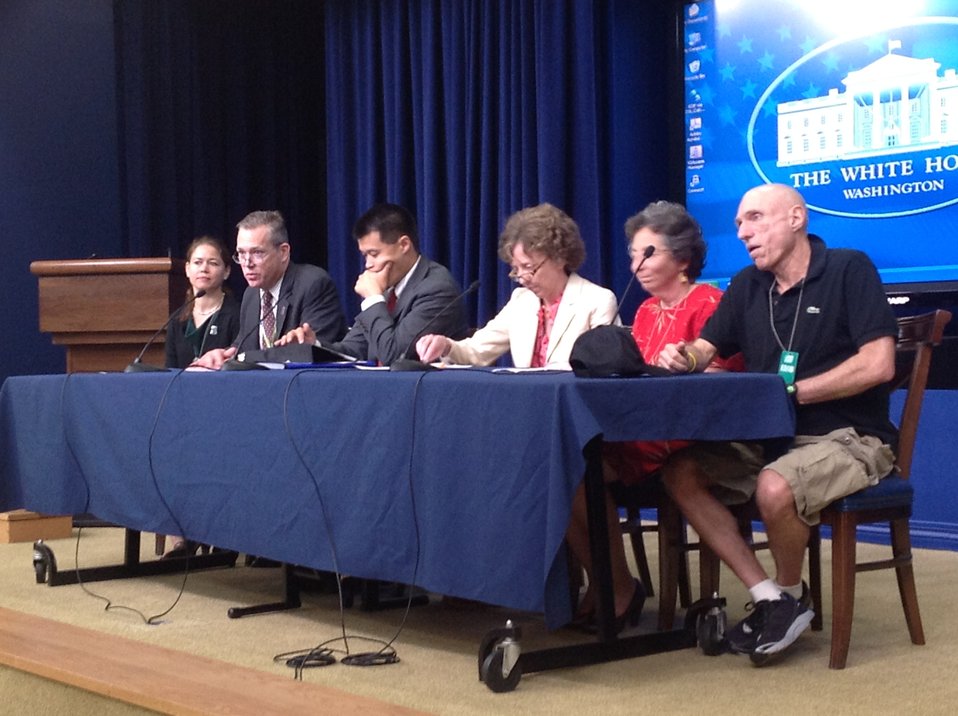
First Panel

WH 2012 World Hepatitis Day Event